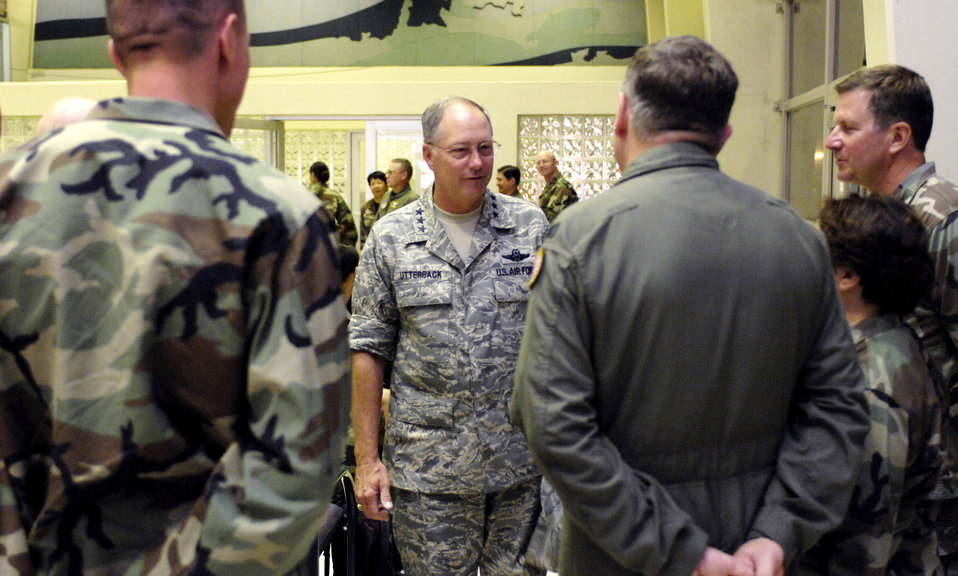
Medics on the move

Lt. Gen. Loyd S. Utterback speaks to medics prior to them leaving for a humanitarian mission July 20 at the passenger terminal on Hickam Air Force Base, Hawaii. Approximately 50 Airmen, Soldiers and Sailors will travel to Vanuatu, Kiribati and Nauru to provide medical, dental and engineering support to the residents of the Pacific islands. General Utterback is the 13th Air Force commander.